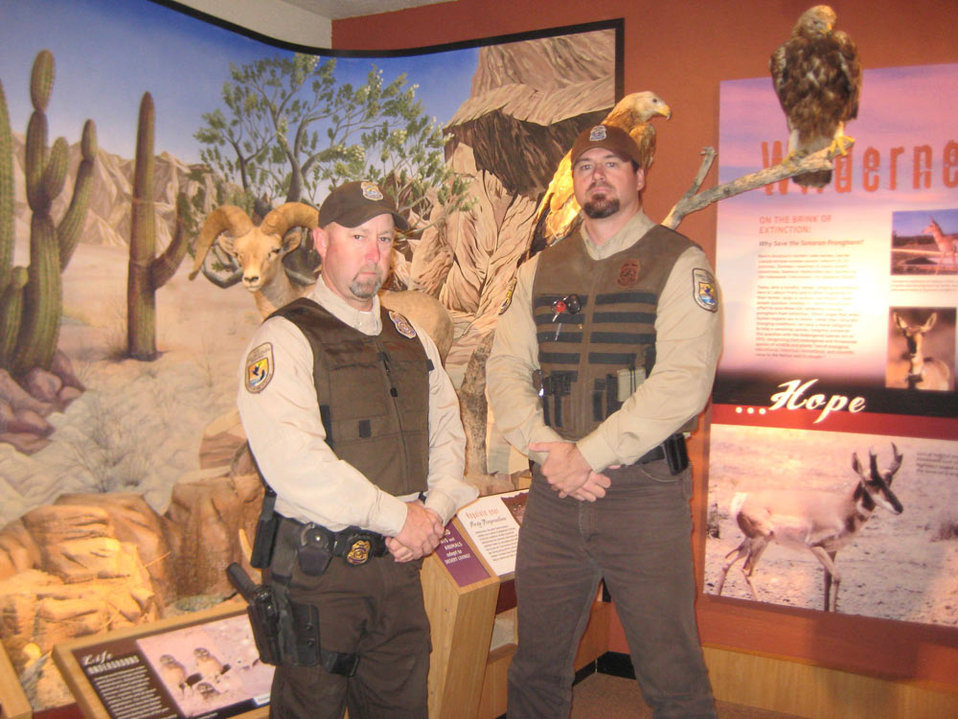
Donnie Ebann and Brian Krukoski-Southwest Region

Donnie Ebann, a Navy veteran, and Brian Krukoski, an Air Force veteran, work as Law Enforcement Officers at Cabeza Prieta National Wildlife Refuge in Arizona.